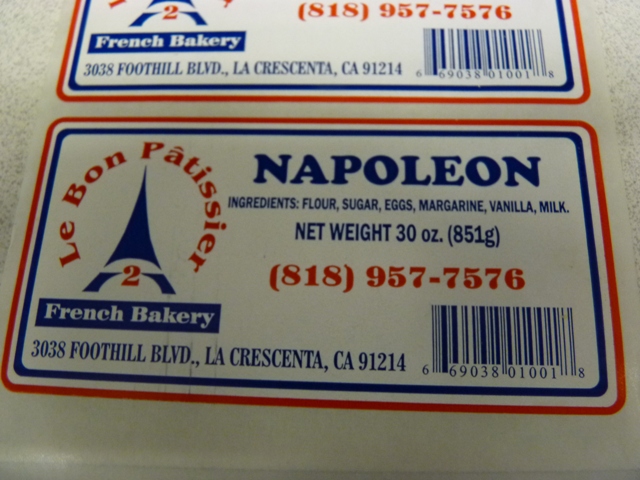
RECALLED - Pastry Products

April 5, 2011 – Product Recall – Le Bon Patissiere-2, Inc. Announces Voluntary Recall On Select Le Bon Patissiere Products That Contain Undeclared Allergens.